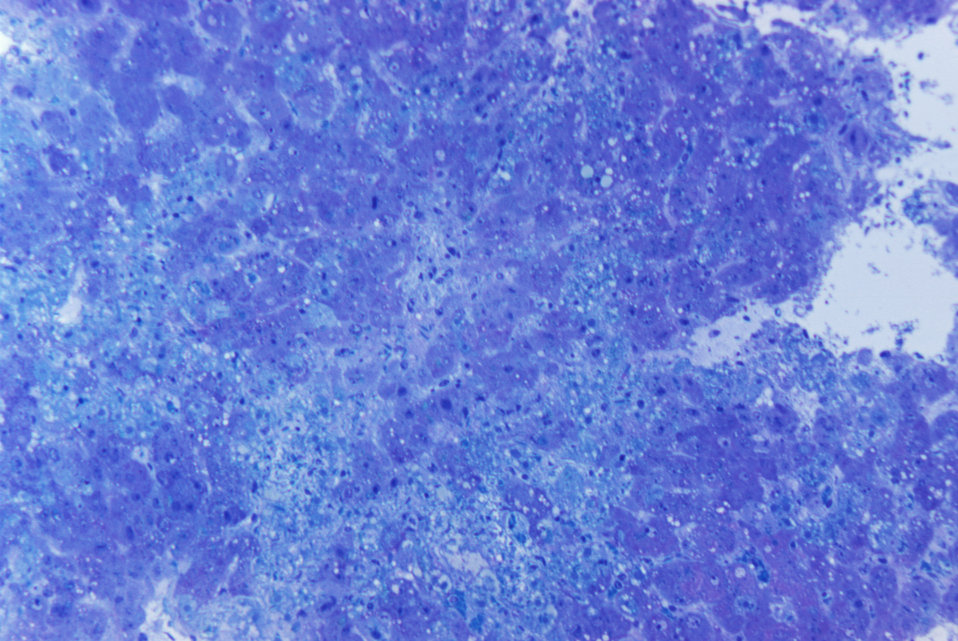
A photomicrograph of hepatitis caused by the Lassa virus, using toluidine-blue azure II stain, magnified 315X.